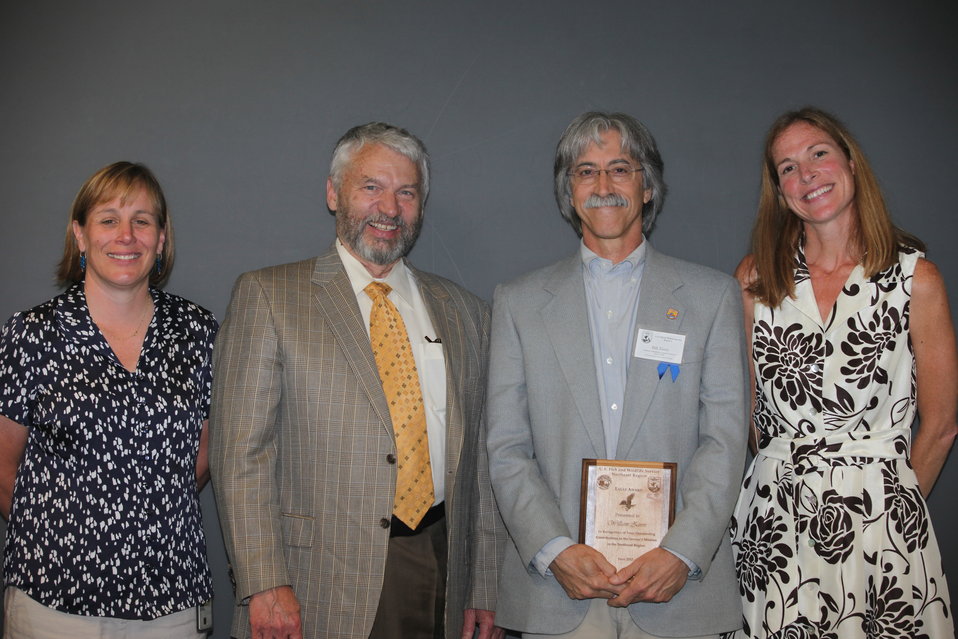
Bill Zinni, Realty and the National Wildlife Refuge System recieved an Eagle Award.
From left to right: Deputy Regional Director Deb Rocque, Deputy Director Rowan Gould, Bill Zinni, and Regional Director Wendi Weber